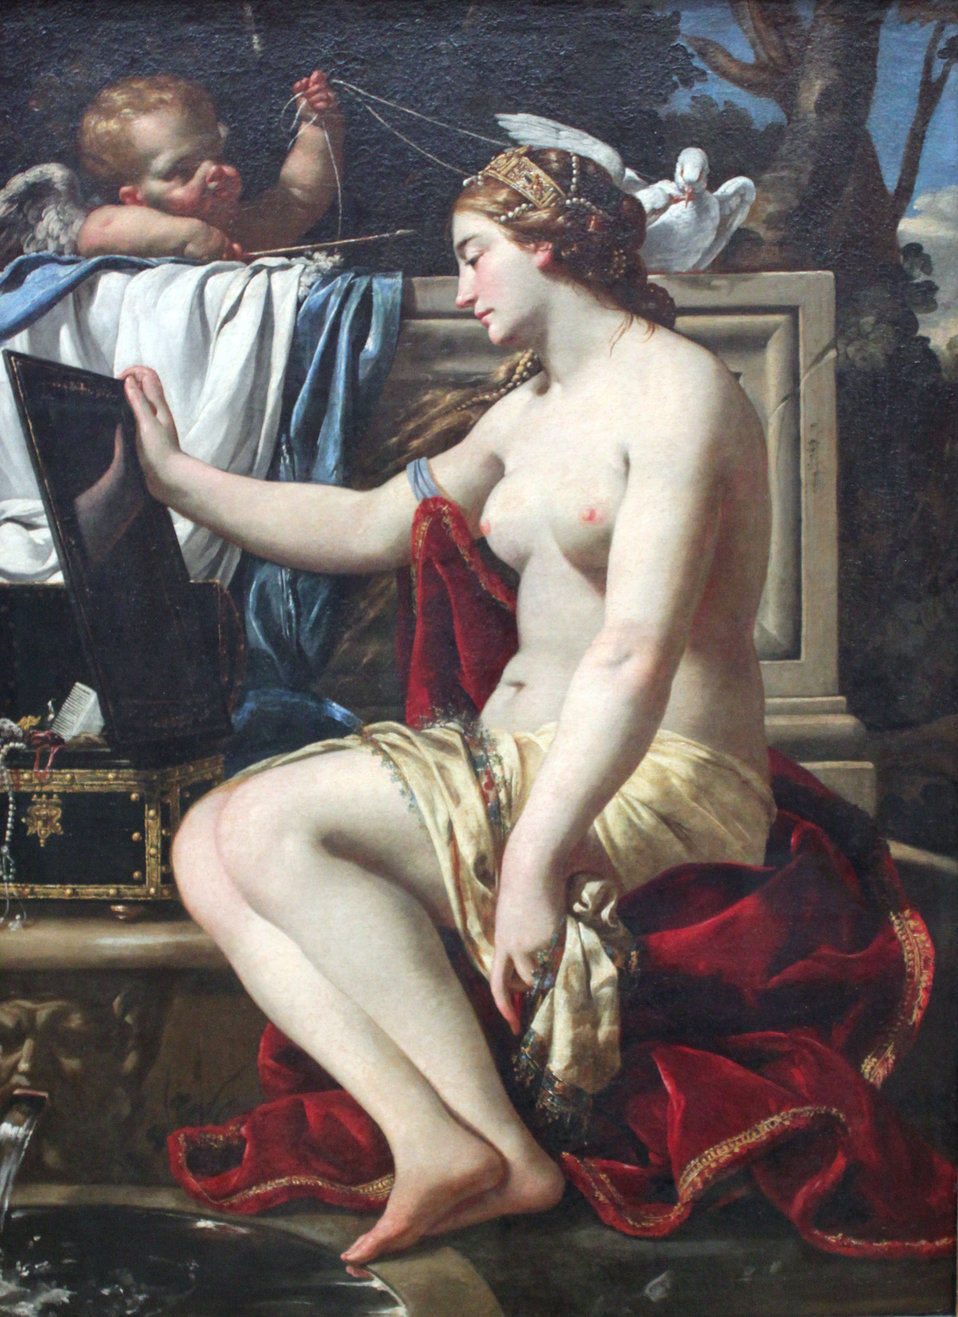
1626 Vouet The Toilet of Venus anagoria